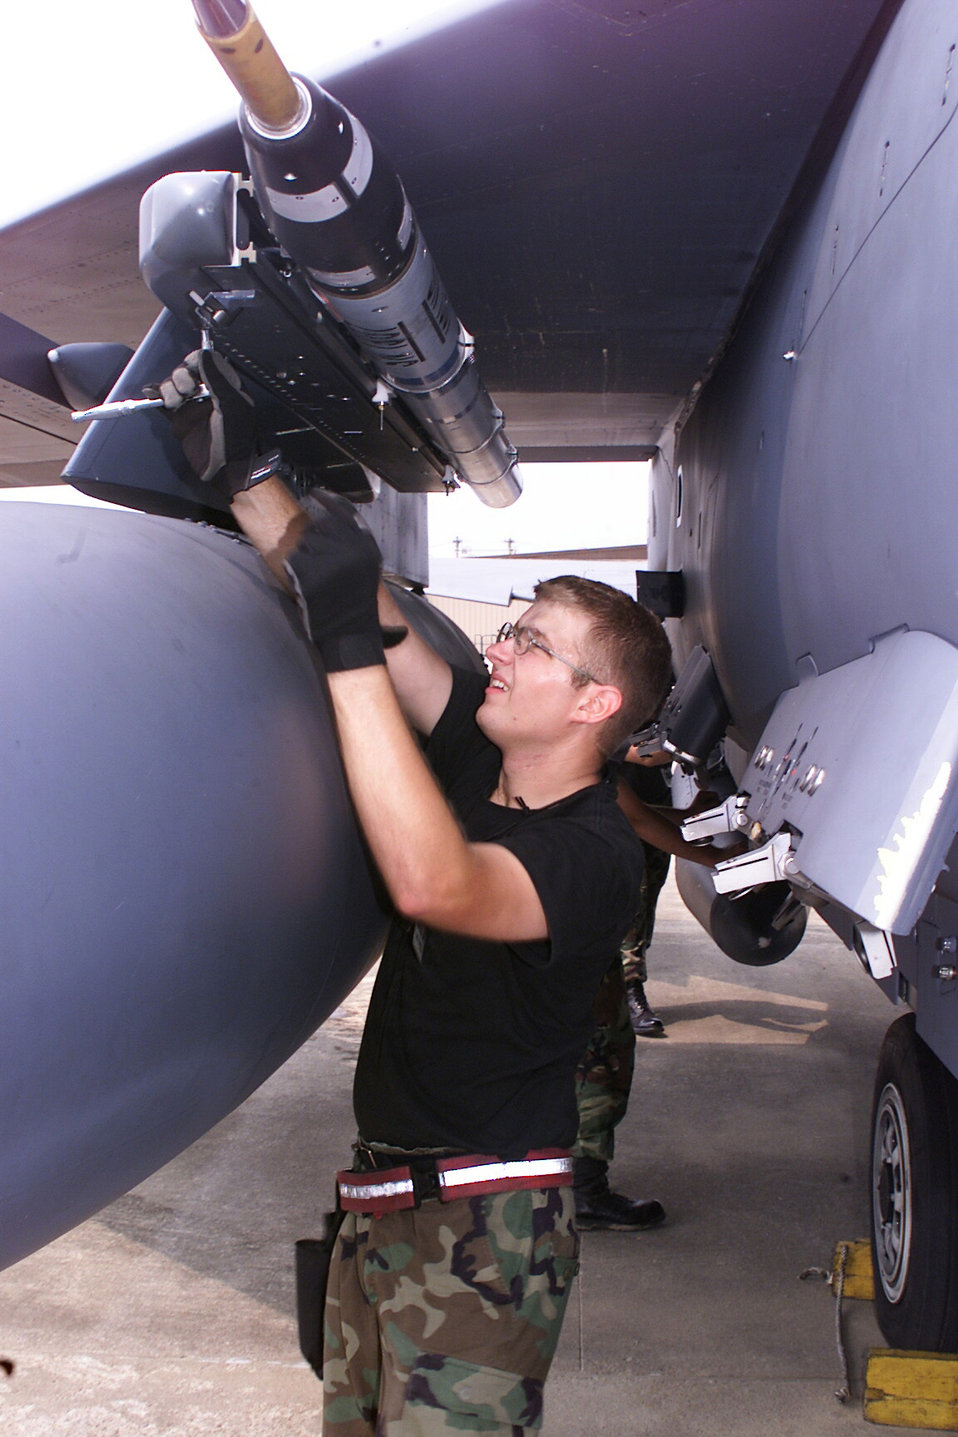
First arrival

GWANGJU AIR BASE, South Korea -- Airman 1st Class Robert Bateman performs post flight operations on an F-15E Strike Eagle after arriving here Sept. 1. Airman Bateman is assigned to the 3rd Air Expeditionary Group.